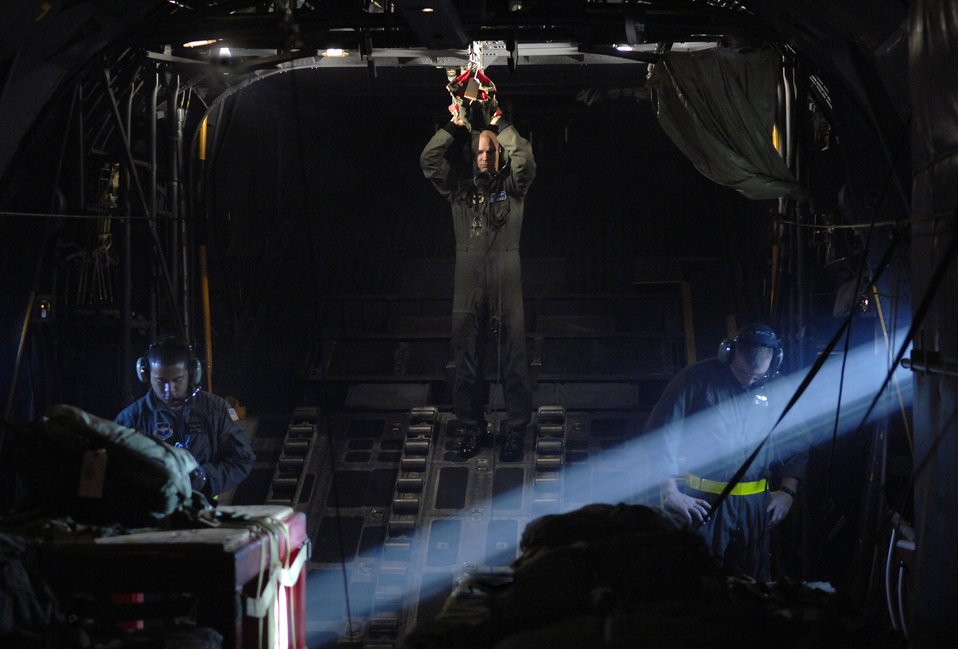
Training to make a herculean effort

Tech. Sgt. Brian Beaty, background, eyes the static wire while tying up a sandbag on a C-130 Hercules while Airman 1st Class Ivory Feaster III, left, looks at his checklist and Army Private First Class J.L. Tiffin waits for further instructions after landing at Little Rock Air Force Base, Ark., Oct. 31. The sandbag is used to simulate a heavy drop. Sergeant Beaty is an instructor loadmaster and both Airman Feaster and PFC. Tiffin are students on their first flight.